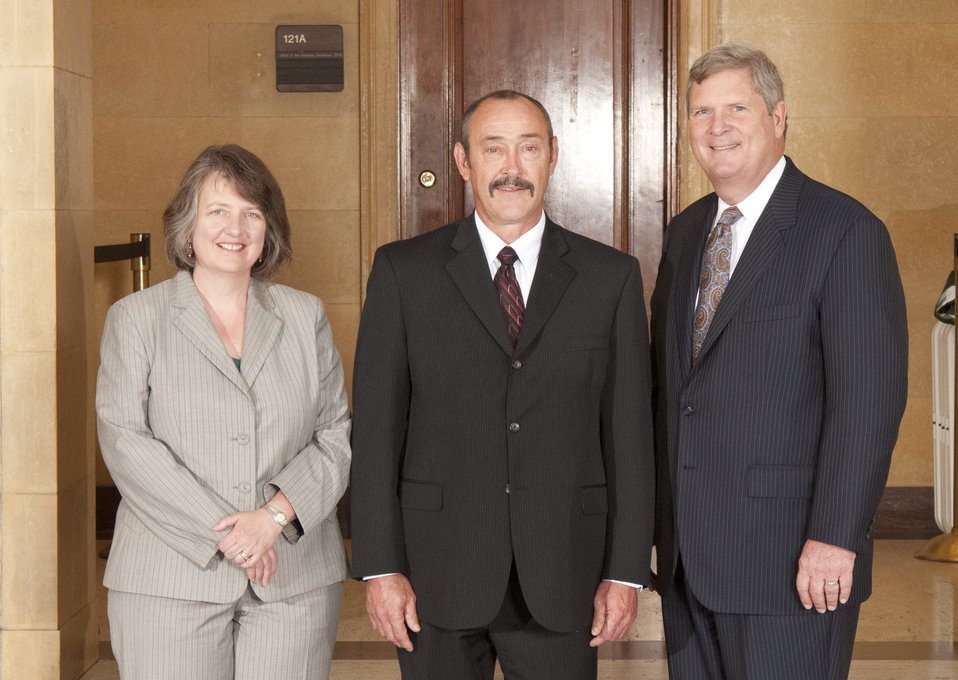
Agriculture Secretary Tom Vilsack and Deputy Agriculture Secretary Kathleen Merrigan with Lee Merrick, Rural Development (RD) during the Honor Award group photography on the patio of the U.S. Department of Agriculture in Washington, D.C. on Wednesday, Sept. 12, 2012.